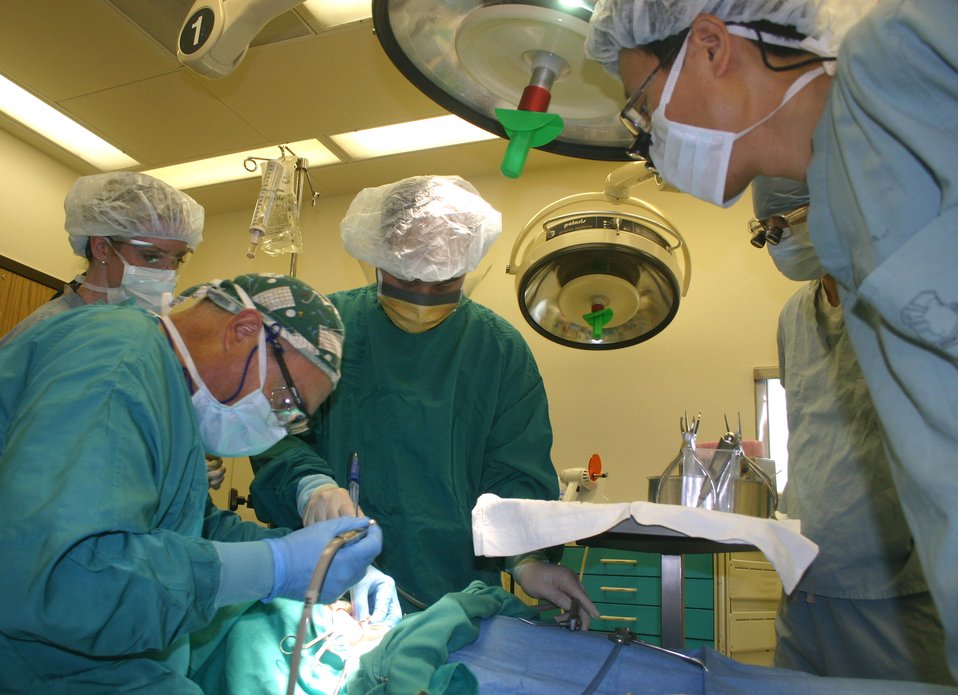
Course prepares dentists to treat children worldwide

Pediatric Dental Course residents observe Col. (Dr.) John Embry, Pediatric Dentistry director (front left), in the operating room Sept. 15 at Wilford Hall Medical Center on Lackland Air Force Base, Texas. Colonel Embry is assisted by Staff Sgt. Richard Nugent (center), 59th Dental Squadron dental technician. Observing are (left to right) Capt. Jan Shirley from Royal Air Field Upwood, United Kingdom; Capt. Nathan Krivitsky, Aviano Air Base, Italy; and Capt. Jaesuk Yoo, Osan AB, Korea. Colonel Embry, pediatric dentistry director, is performing a full mouth dental rehabilitation on a pediatric patient.